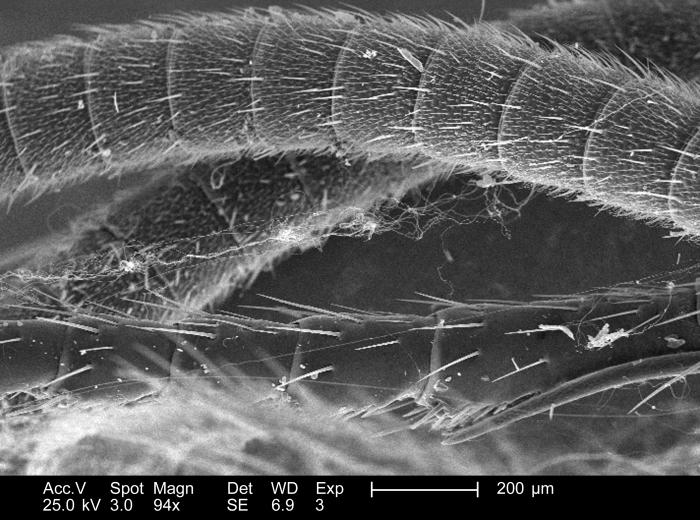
This relatively low-powered scanning electron micrograph (SEM), magnified 94x, revealed the structural details displayed along the exterior of the segmented length of an unidentified dragonfly's antenna. This insect was found deceased on the grounds of the Decatur, Georgia suburbs, and after its demise, retained a morphologically pristine state.